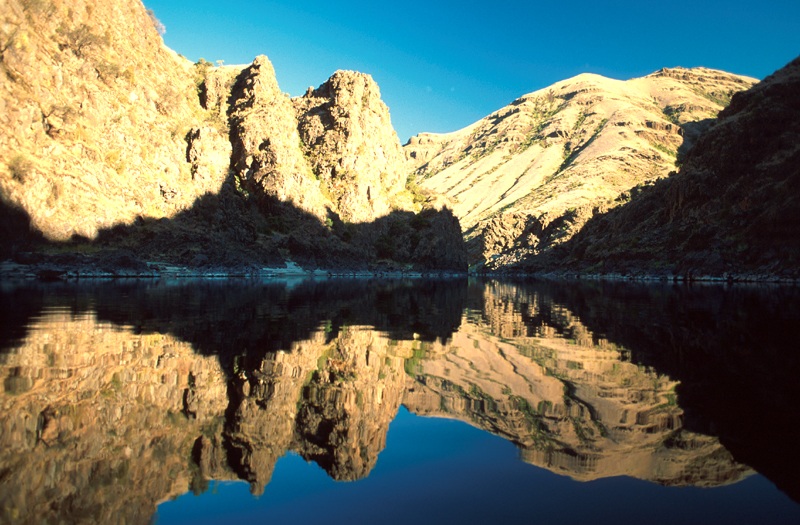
Lower Salmon River Cottonwood Field Office UCSC Upper Columbia-Salmon Clearwater District